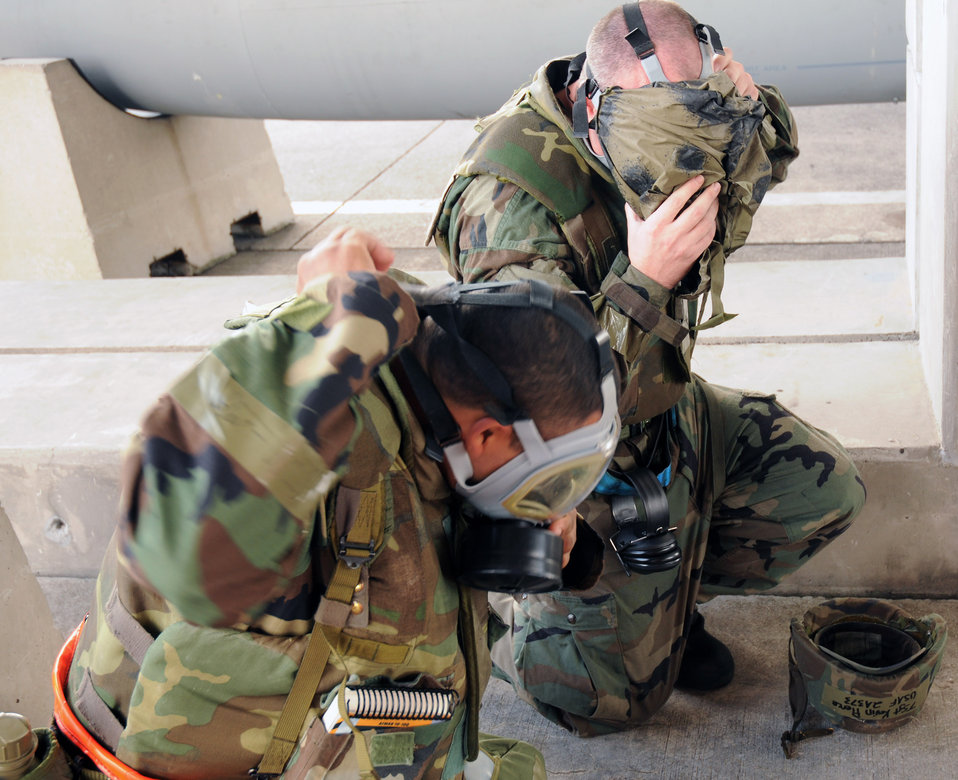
Airmen, Marines join forces during exercise at Kadena

Airman 1st Class Eric McNiel and Tech. Sgt. Kevin Pierce don Mission Oriented Protective Posture 4 gear during a simulated chemical attack Dec. 4 at Kadena Air Base. The simulation is part of Exercise Beverly High 09-01, a joint Air Force-Marine Corps exercise designed to test the ability of both services to execute their critical missions under simulated combat conditions. Airman McNiel and Sergeant Pierce are from the 18th Aircraft Maintenance Squadron.